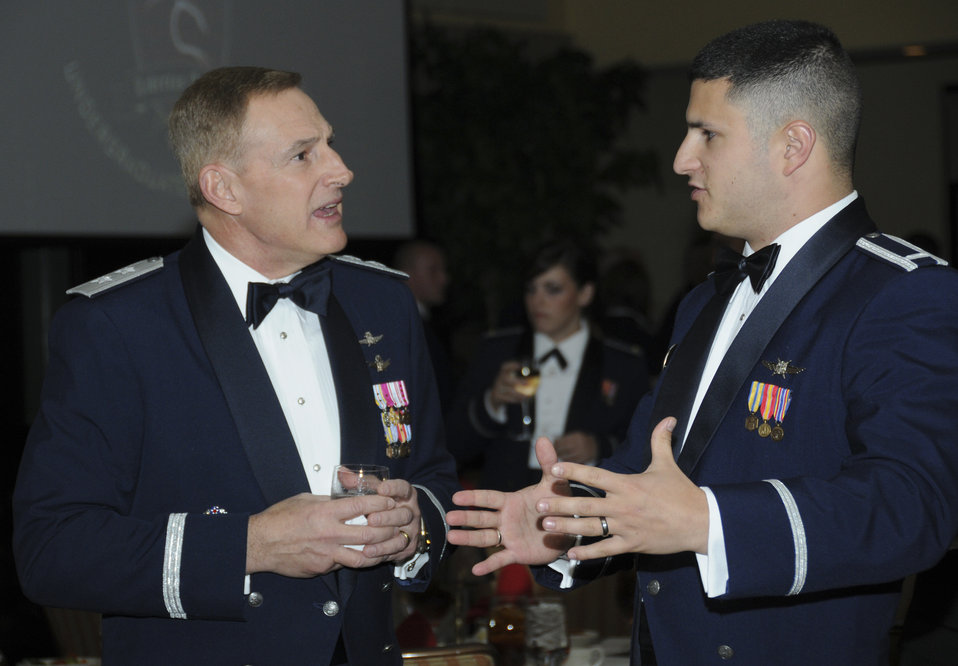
Cyber Graduation

Maj. Gen. Michael Basla, left, speaks with 1st Lt. Christian Ford Dec. 6, 2010, at a dinner honoring the Air Force's first undergraduate cyberspace training graduates at Keesler Air Force Base, Miss. General Basla is the vice commander of Air Force Space Command at Peterson Air Force Base, Colo. Lieutenant Ford is an instructor in the 333rd Training Squadron at Keesler AFB, where the course is taught.